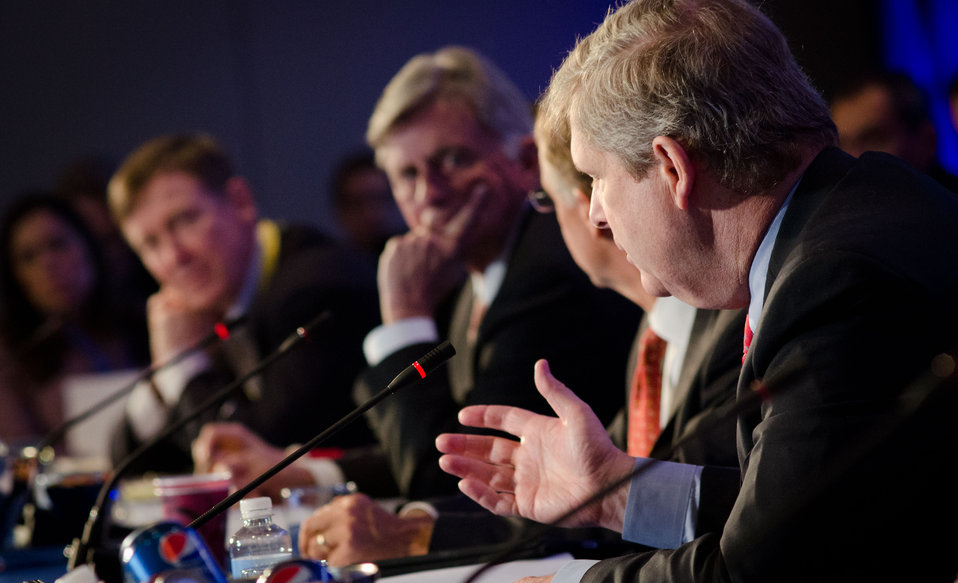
Agriculture Secretary Tom Vilsack (right) was a guest speaker and talked about the many ways the Department of Agriculture can help the children and the workforce, during the National Governors Association Education, Early Childhood and Workforce Committee meeting in Washington, D.C., on Sunday, February 26, 2012.